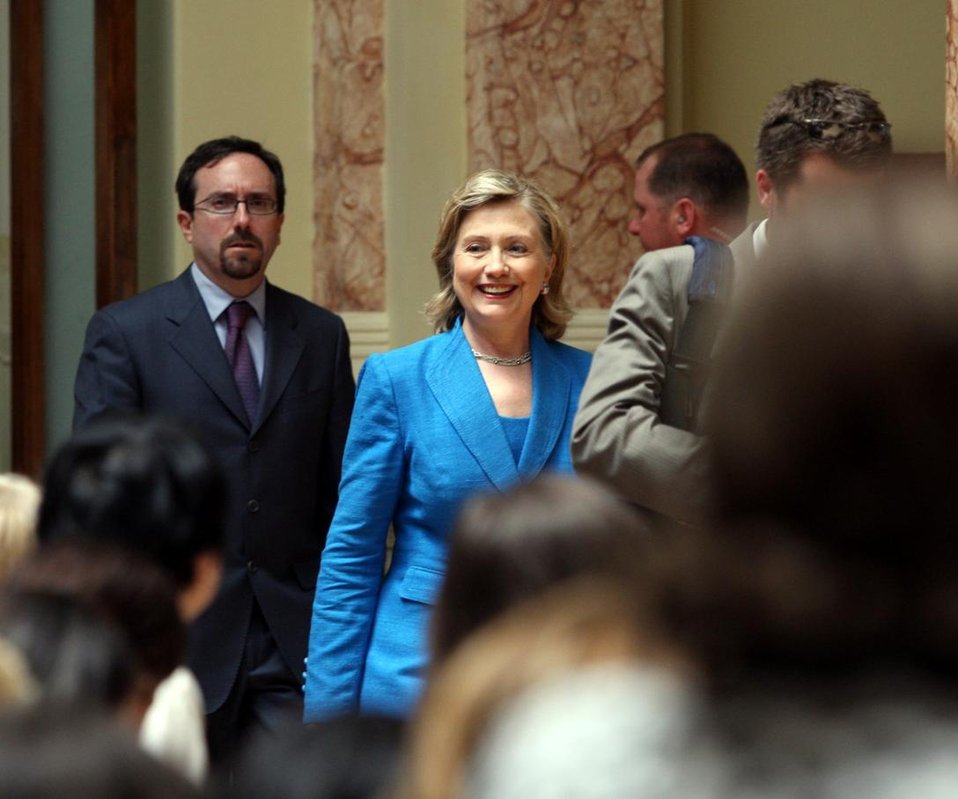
Ambassador Bass and Secretary Clinton Enter Town Hall Meeting for Georgian Women Leaders

U.S. Ambassador to Georgia John Bass and U.S. Secretary of State Hillary Rodham Clinton enter the Town Hall meeting for Georgian Women Leaders in Tbilisi, Georgia, on July 5, 2010.